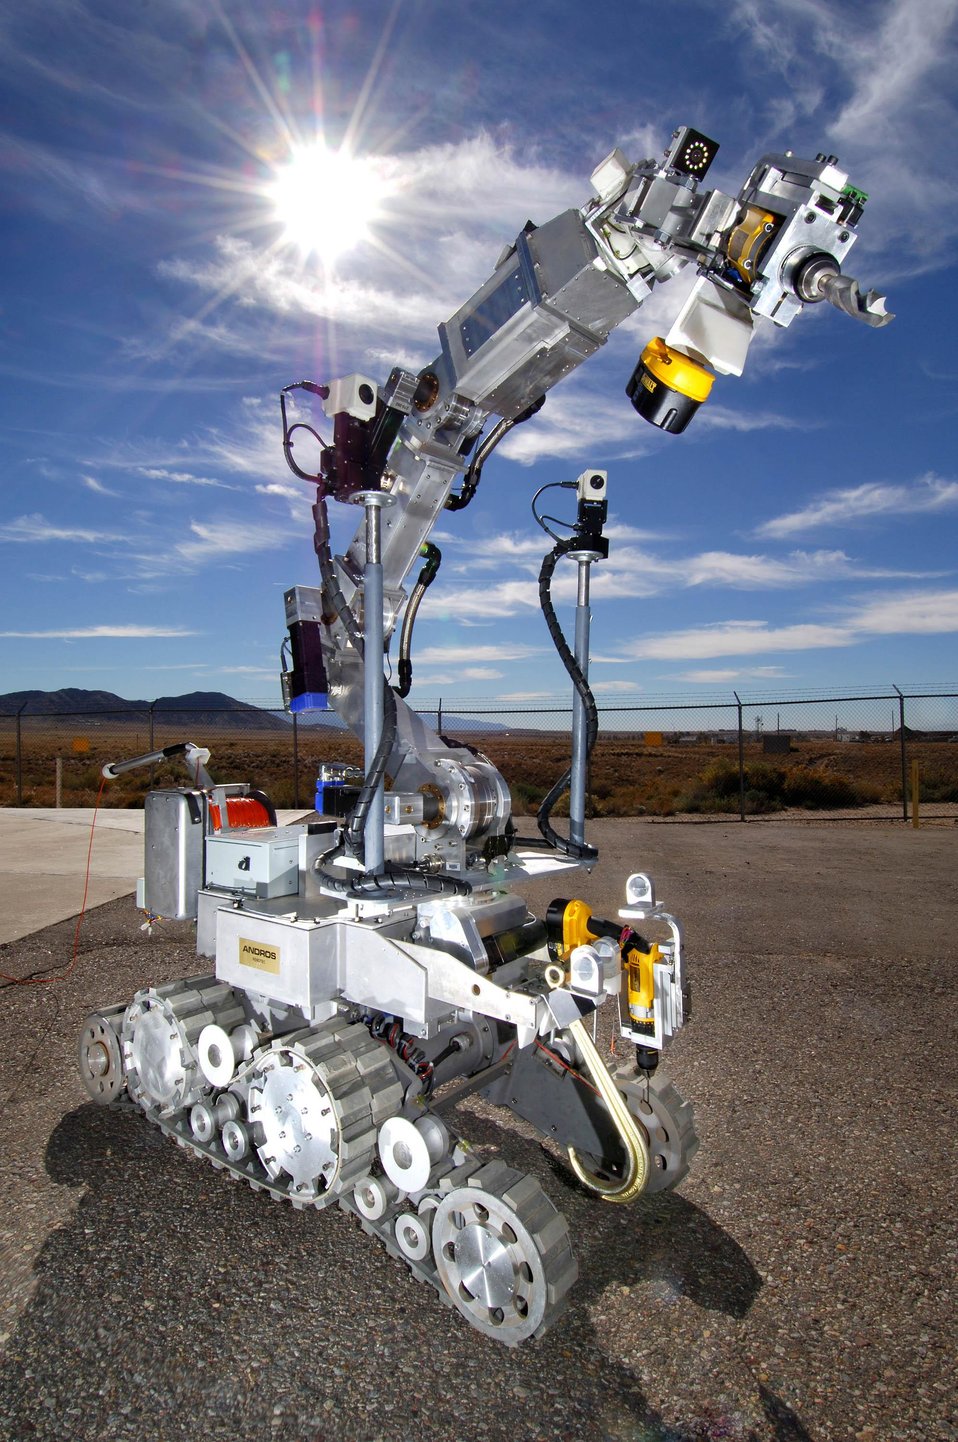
THE MIGHTY MOUSE ROBOT AT SANDIA NATIONAL LABORATORY.

THE ROBOT IS PART OF THE RADIOLOGICAL ASSISTANCE PROGRAM AT SANDIA NATIONAL LABORATORY AND COLLABORATES WITH DOD'S WHITE SANDS MISSILE RANGE GAMMA IRRADIATION FACILITY. THE FACILITY'S PURPOSE IS TO IRRADIATE ELECTRIC CIRCUIT BOARDS TO TEST THEIR SURVIVABILITY UNDER EXTREME CIRCUMSTANCES. THE ROBOT WEIGHS 600 POUNDS, FIVE FOOT LONG, ROLLS ON TREADS AND CAN MANEUVER AROUND OBSTACLES AND HAS A LONG MULTI-JOINTED GRIPPER ARM. RECENTLY, MIGHTY MOUSE RESOLVED A PROBLEM WITH A STUCK 15 KILOCURIE COBALT-60 SOURCE AT THE GIF. WORKERS AT THE FACILITY WERE ABLE TO SUCCESSFULLY RETURNED A SOURCE TO A SAFE CONDITION WITH MINIMAL RADIATION DOSE TO PERSONNEL.